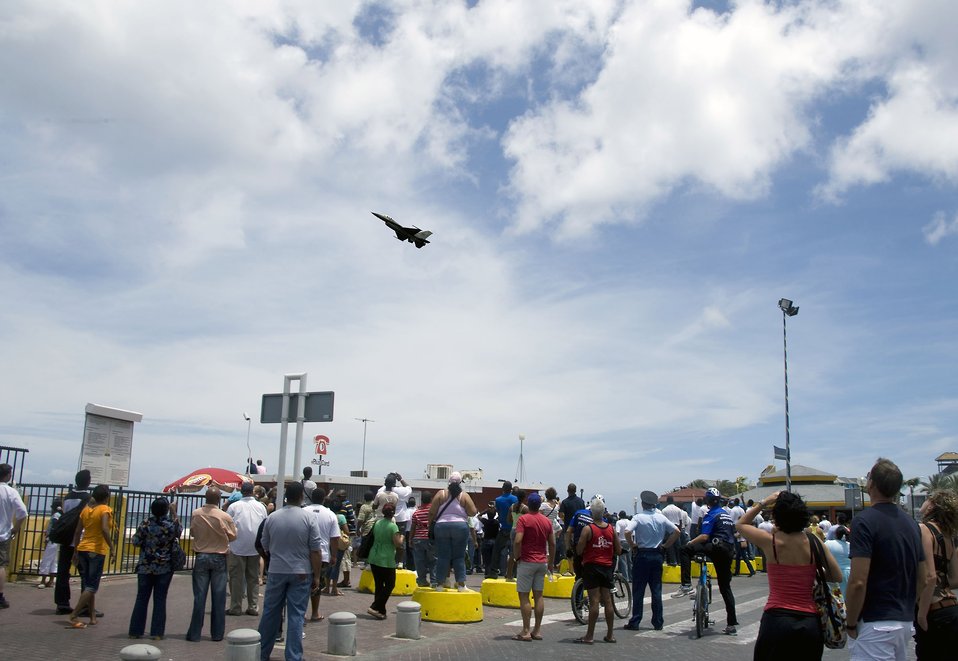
Dutch Navy Days

An F-16 Fighting Falcon, flown by Capt. George Clifford of the Viper East F-16 demonstration team, flies over Curacao, Netherlands Antilles. The Viper East team, from Shaw Air Force Base, S.C., joined officials from Air Forces Southern headquarters at Davis-Monthan AFB, Ariz., to augment